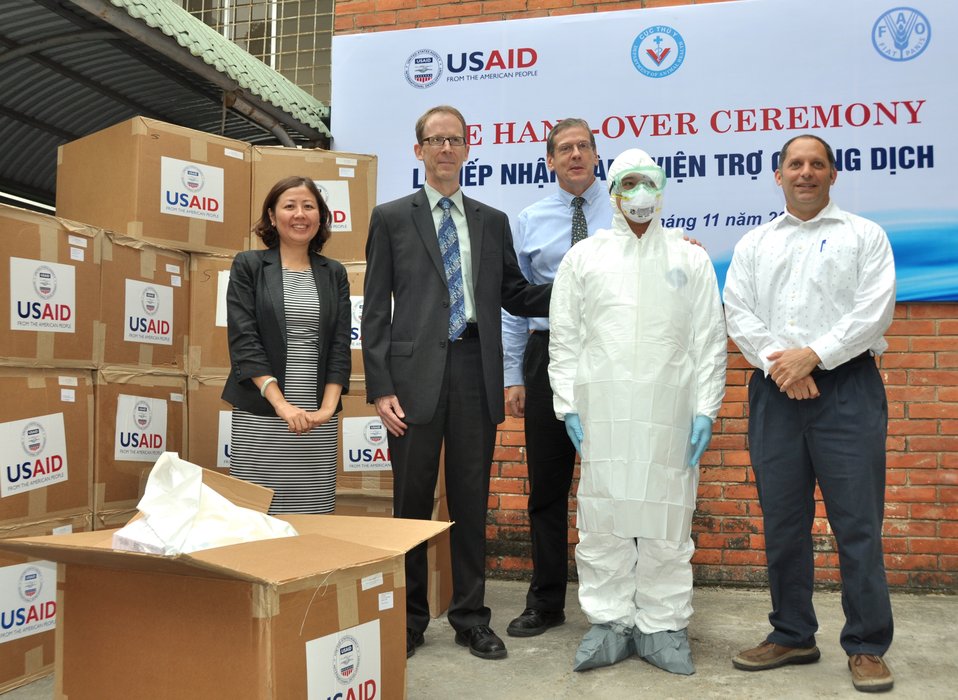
USAID hands over personal protective equipment to the Department of Animal Heath under Vietnam’s Ministry of Agriculture and Rural Development.

Hanoi, November 20, 2013.